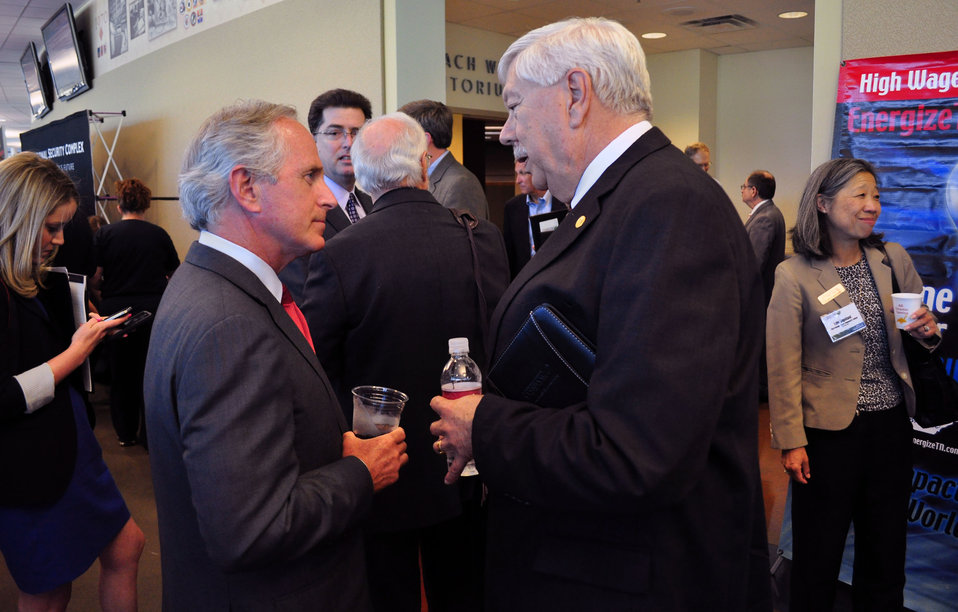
U.S. Senator Bob Coker and Mayor of Oak Ridge Tom Beehan Tennessee Valley Corridor 2013 Oak Ridge

13-062 DOE photo Lynn Freeny 5-29-2013 Oak Ridge Tennessee